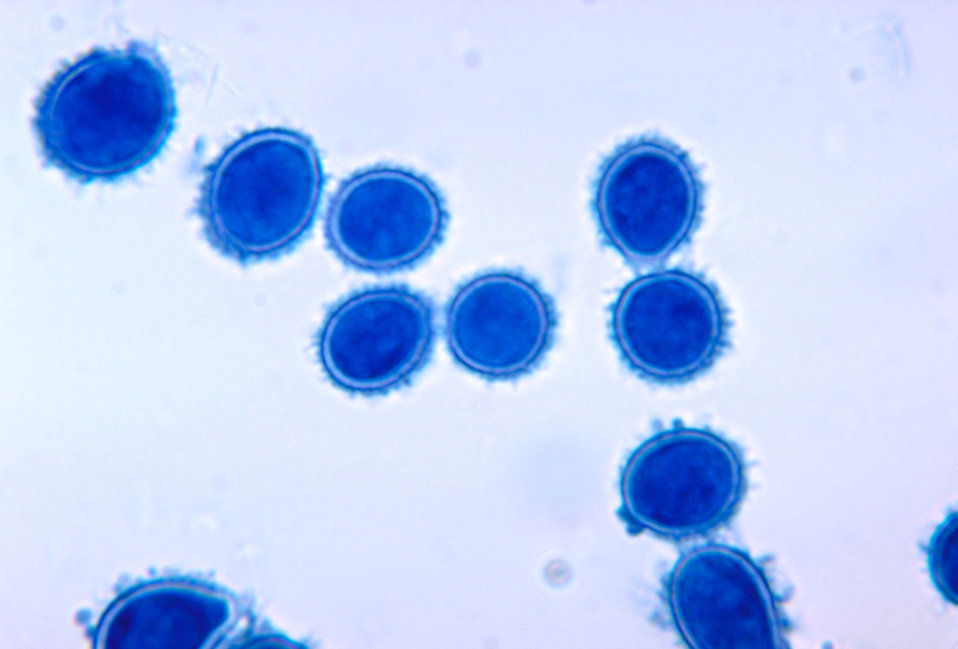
This micrograph depicts conidia from the fungal organism of the genus Sepedonium sp..